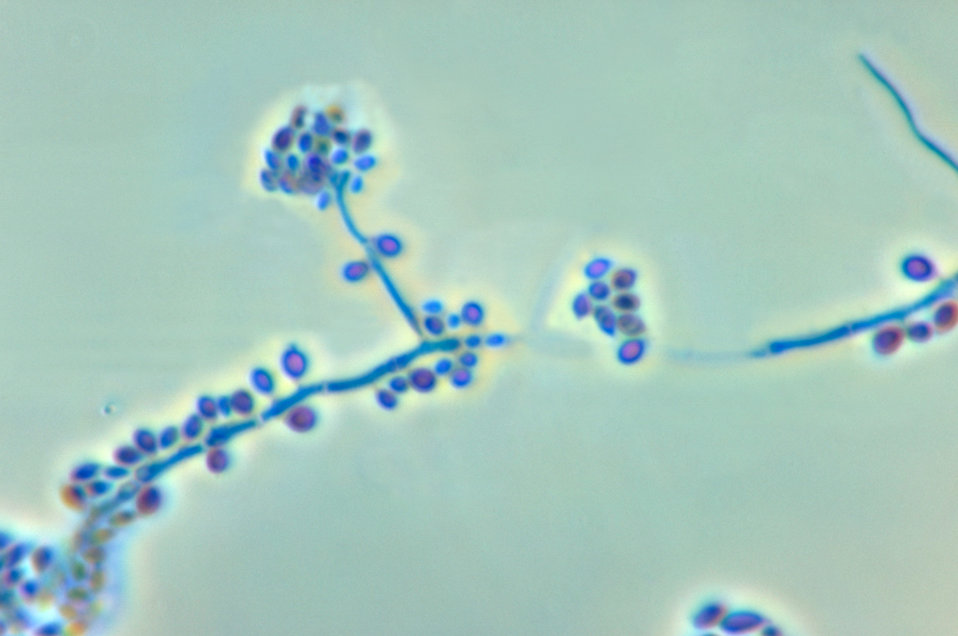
This photomicrograph reveals the conidiophores and conidia of the fungus Sporothrix schenckii.